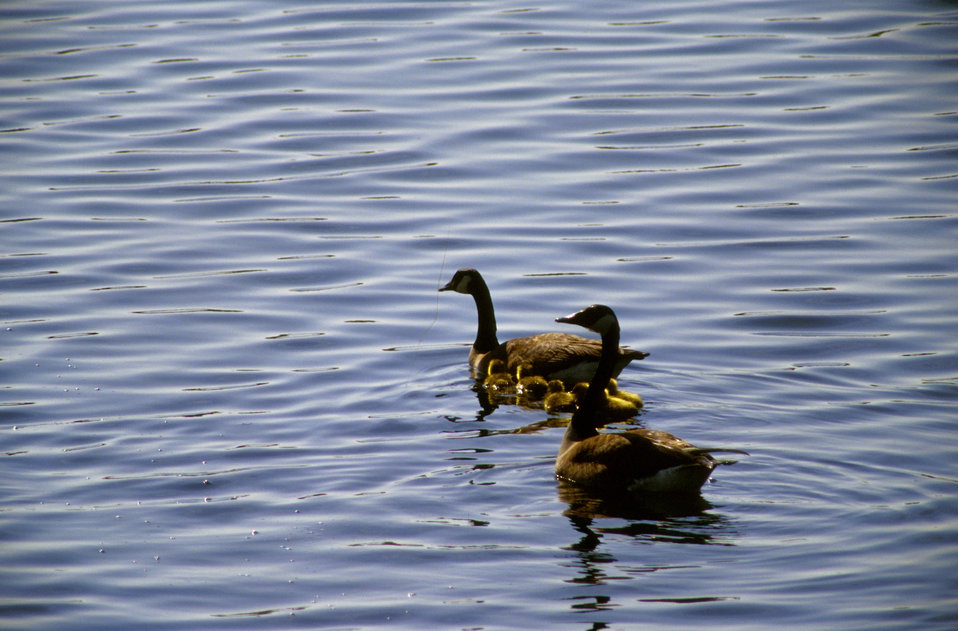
Canada Geese with Chicks

A profile view of pair of Canada Geese and their young.